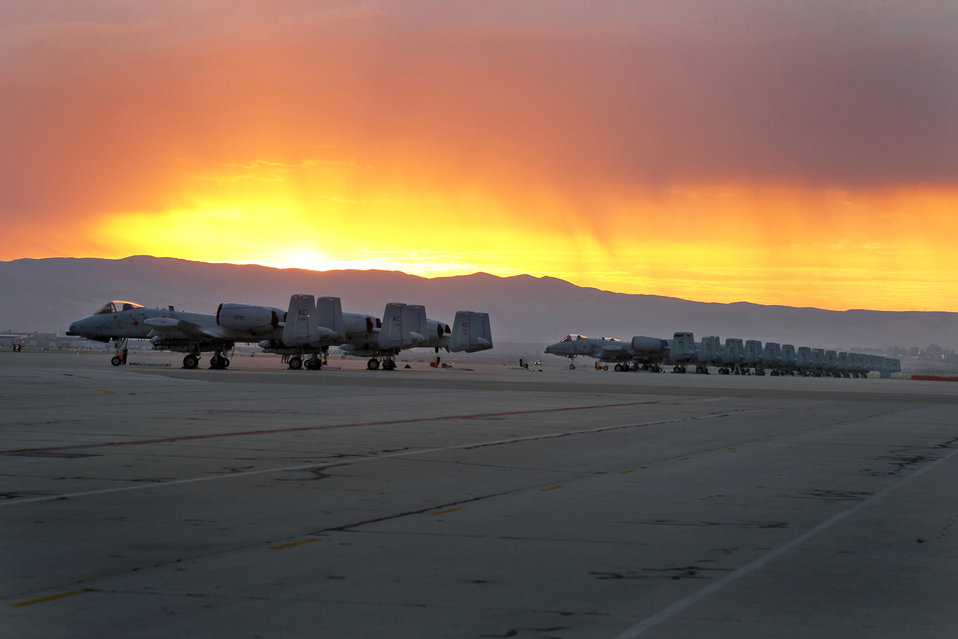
Thunderbolts ready to go

A-10 Thunderbolt IIs from across the Air Force that are participating in at Hawgsmoke 2010 sit on the ramp at Gowen Air National Guard Base, Idaho, during a peaceful sunrise Oct. 15, 2010. The competition allows A-10 pilots and maintenance crews to test their skills through friendly competition.